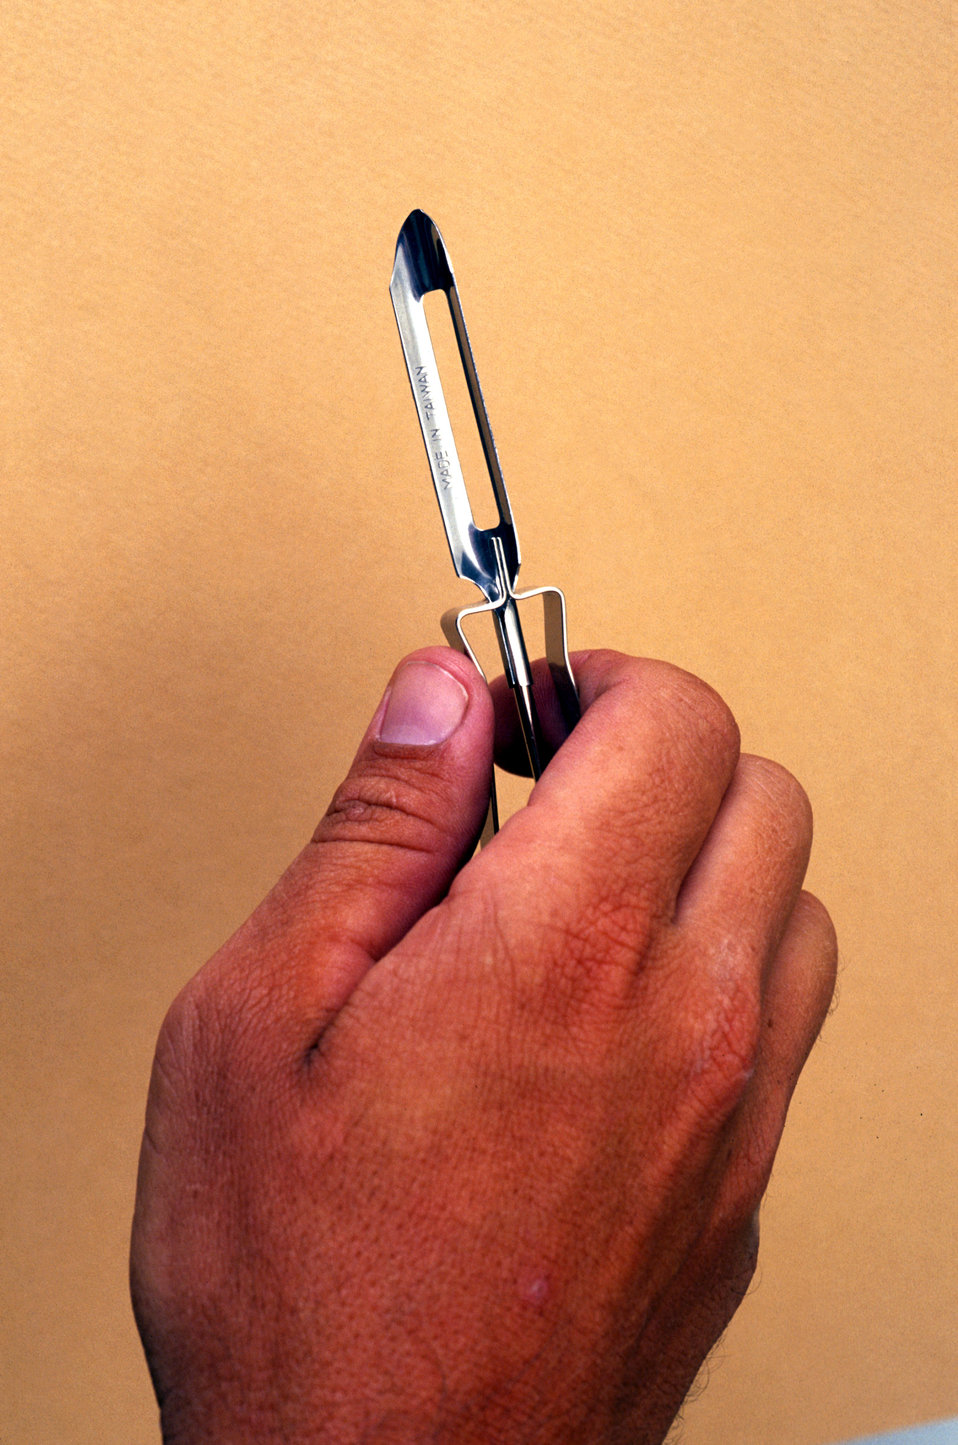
This 1996 photograph, is one of four PHIL images (see PHIL# 9117, 9118 and 9119), which depict the 'Good Grips�', larger, rubber-handled potato peeler with its smaller, all metal, hard edged cousin. The larger, softer, and more easily held peeler was designed with a greater degree of ergonomic user-friendliness in mind. It is able to comfortably fit a wider range of hand sizes with its softer, rubber handle. In this particular image, note that this man's right hand is grasping an all-metal potato peeler, which appears very small when compared to the size of the hand, and is contoured with hard edges, which reduces the level of comfort needed in the activity of peeling produce. Compare this with the far more comfortable, larger, rubber-handled peeler in PHIL# 9117.